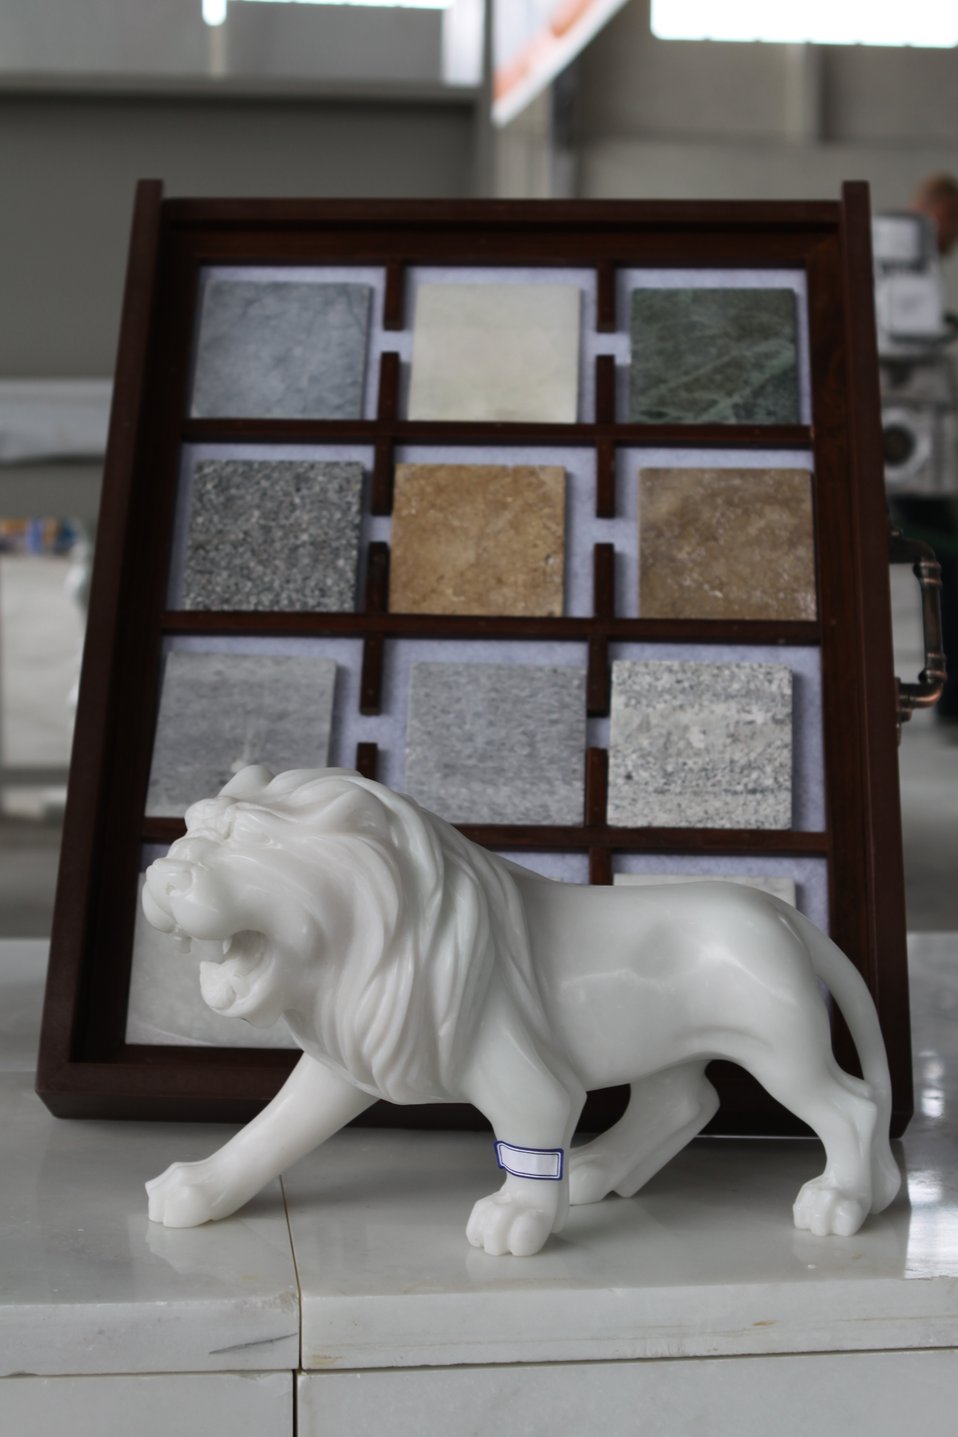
100525 Hirat Marble Conference 286